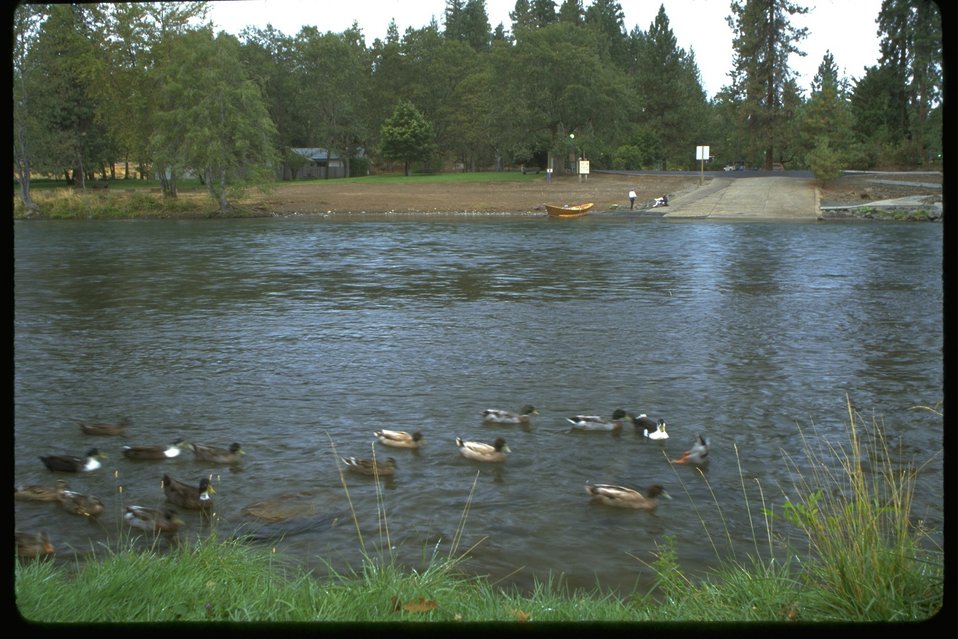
Drift boat sitting next to a boat ramp on the Rogue River. Also, ducks in the foreground.